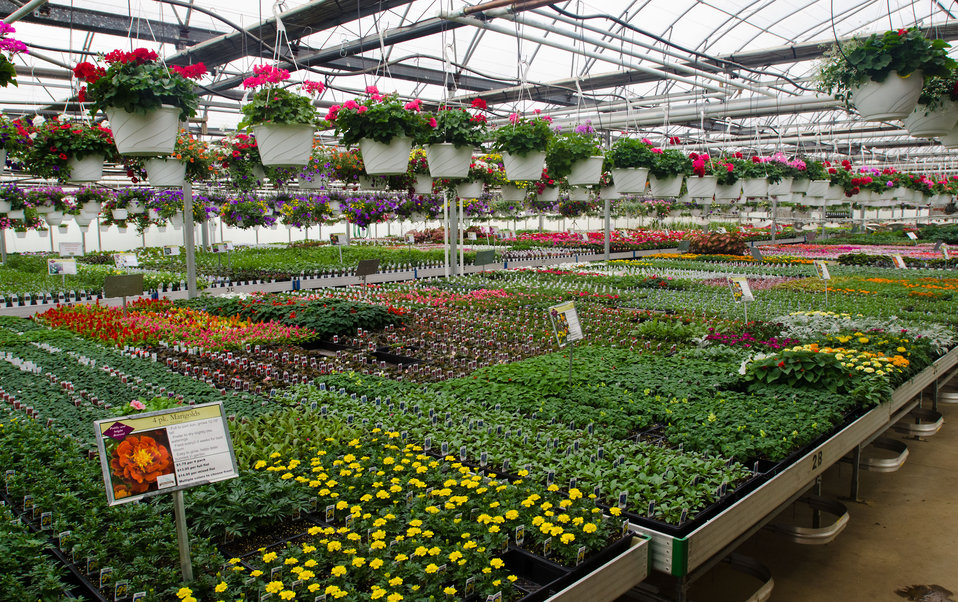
Good Harvest Farm on April 19, 2011 in Strasburg, PA, completed Rural Energy for America Program (REAP) grant supported renovation six months ago that replaced an 80-year old structure with a new 4,000 sq. ft. facility that features energy efficient glass roof with curtains that block or trap heat, radiant heaters in or above the floor, and the replacement of an oil-fired hot-air furnaces with propane fueled boilers that supply fin-tube and cement embedded tube elements with hot water. With current fuel prices, there is a projected 2011 energy cost savings of more than $20,000; a 40% reduction in energy costs – exceeding projected savings. Plant health and quality has improved and been more consistent because the temperature and humidity is computer controlled and distributed evenly throughout the facility. Utilizing sensors and a roof mounted weather station the system can maintain four different climate zones 24-hours a day. Two 1,000,000 BTU propane fueled boilers heat the water to 190 degrees for the 8,000 feet of fin-tube heating elements were used where the original foundation, and the 8,000 feet of tubing that was embedded in a new cement foundation. After traveling through the energy efficient system, water only looses 20 degrees. When temperatures become to hot, motorized roof vents open to allow rising heat to escape; a 98% energy savings from massive fans that previously forced air out. Both systems create a microclimate in and round the plant trays in the growing and sales room. Representing Good Harvest Farm Chris Powell says, “You don’t need to have a lot of land to have a lot of green houses. There are places in cities where vegetables are grow on store roof tops and selling them below in the same structure.”